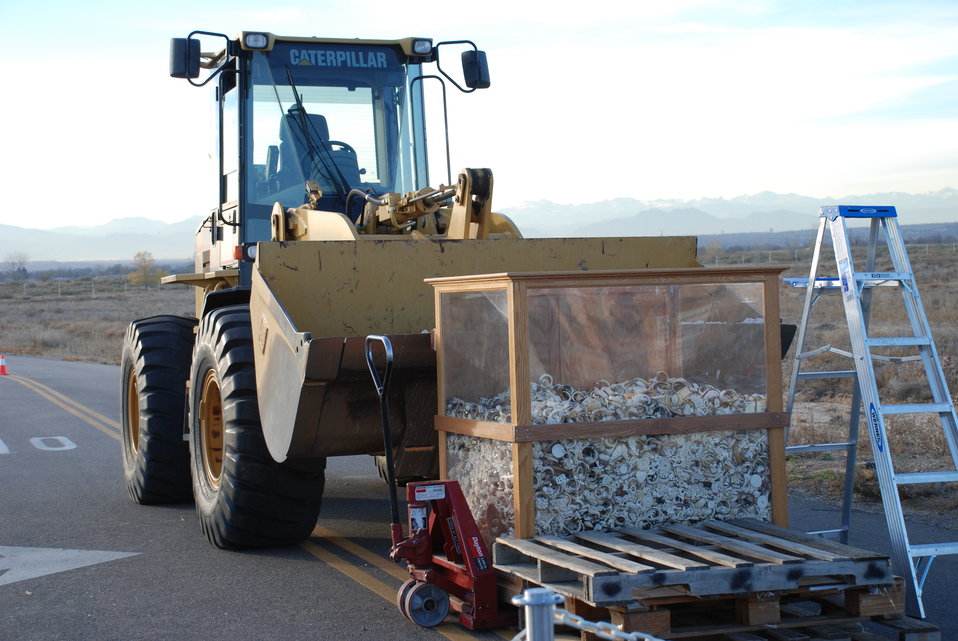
Ivory Crush 2013